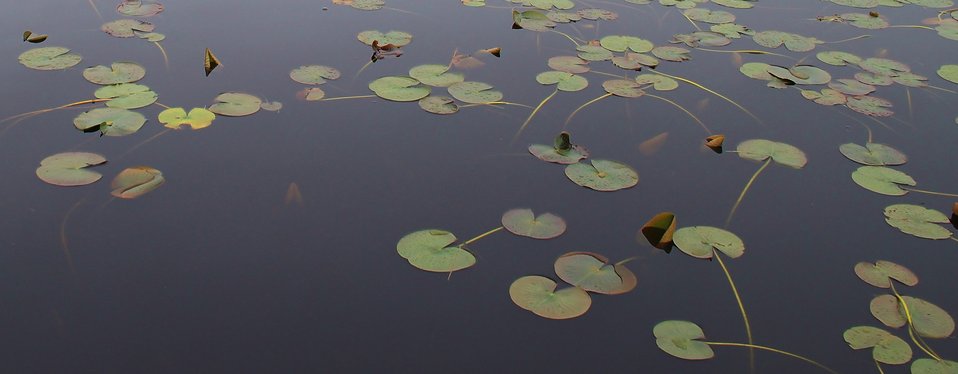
First Creek

Missisquoi National Wildlife Refuge